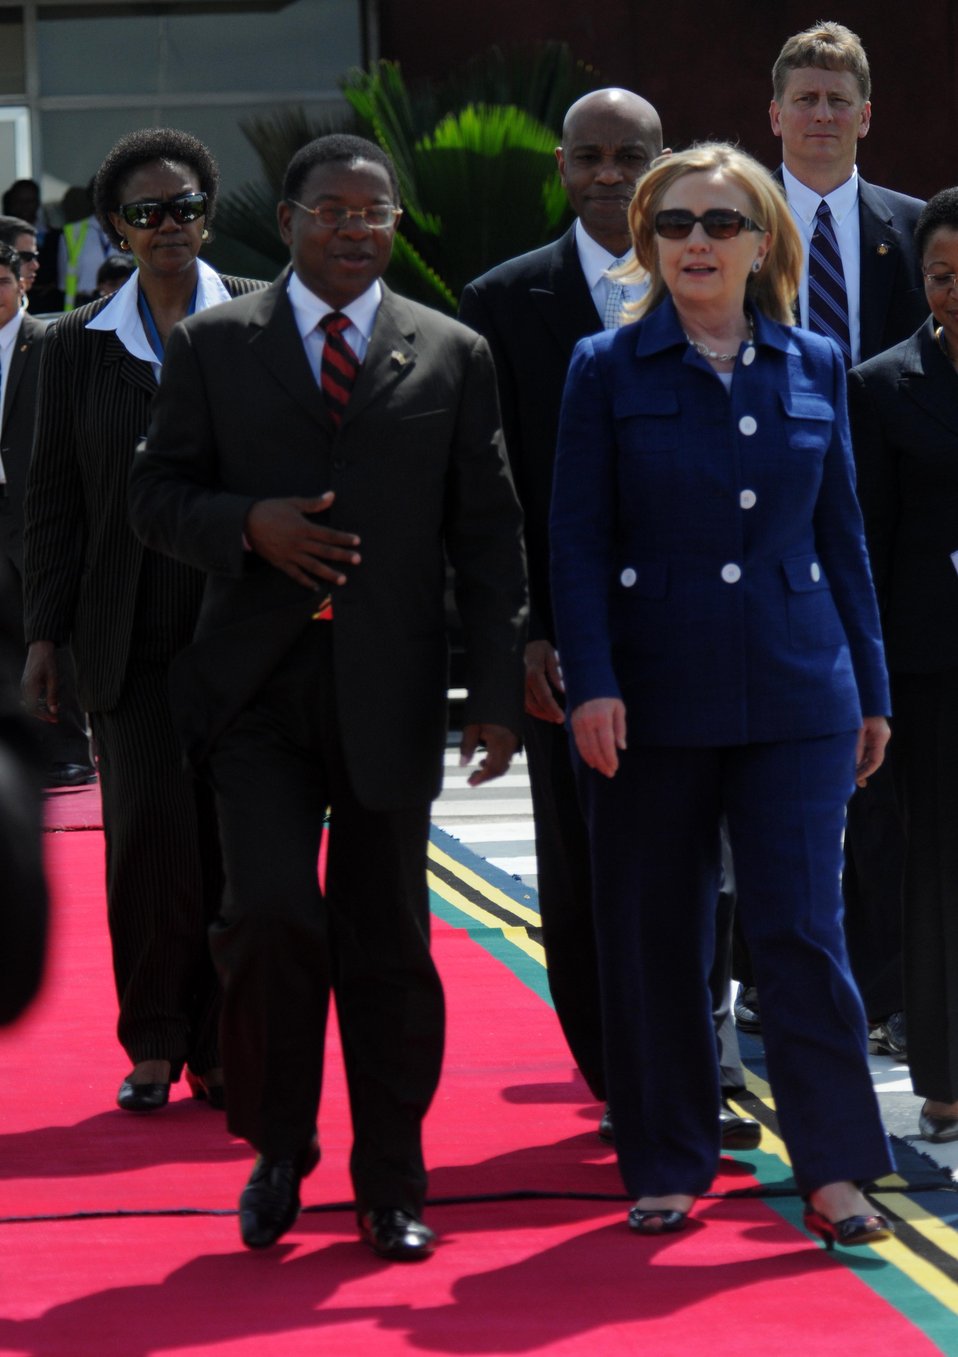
Secretary Clinton Speaks With Tanzanian Foreign Affairs Minister Membe

U.S Secretary of State Hillary Rodham Clinton speaks with Tanzanian Foreign Affairs and International Cooperation Minister Bernard Membe, left, before departing Dar es Salaam, Tanzania, on June 13, 2011.